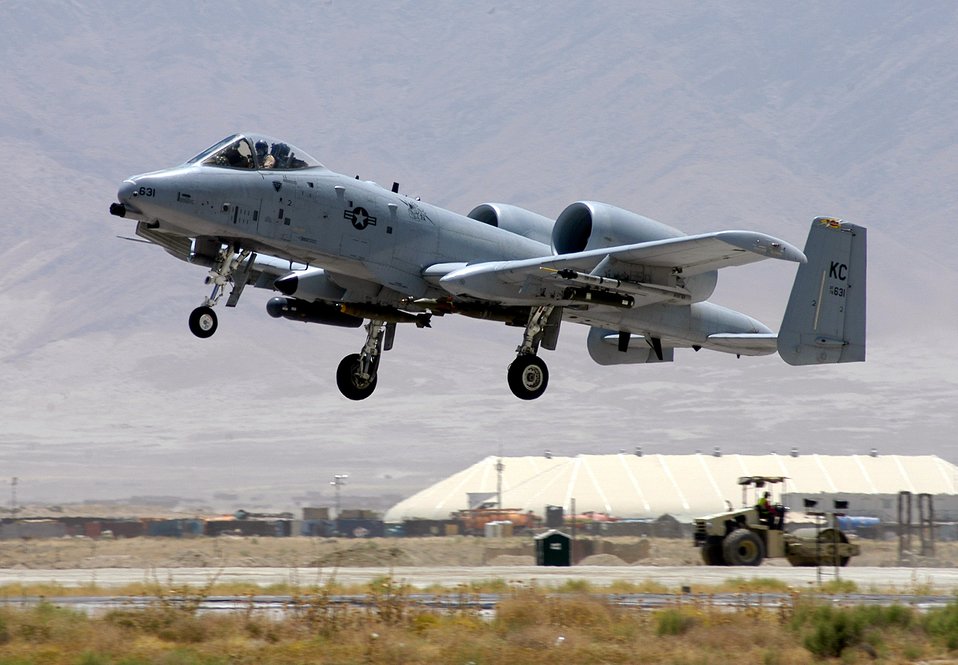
Whiteman A-10s upgrading with

A-10 Thunderbolt IIs from the 442nd Fighter Wing at Whiteman Air Force Base, Mo., like this one, will be upgraded with new